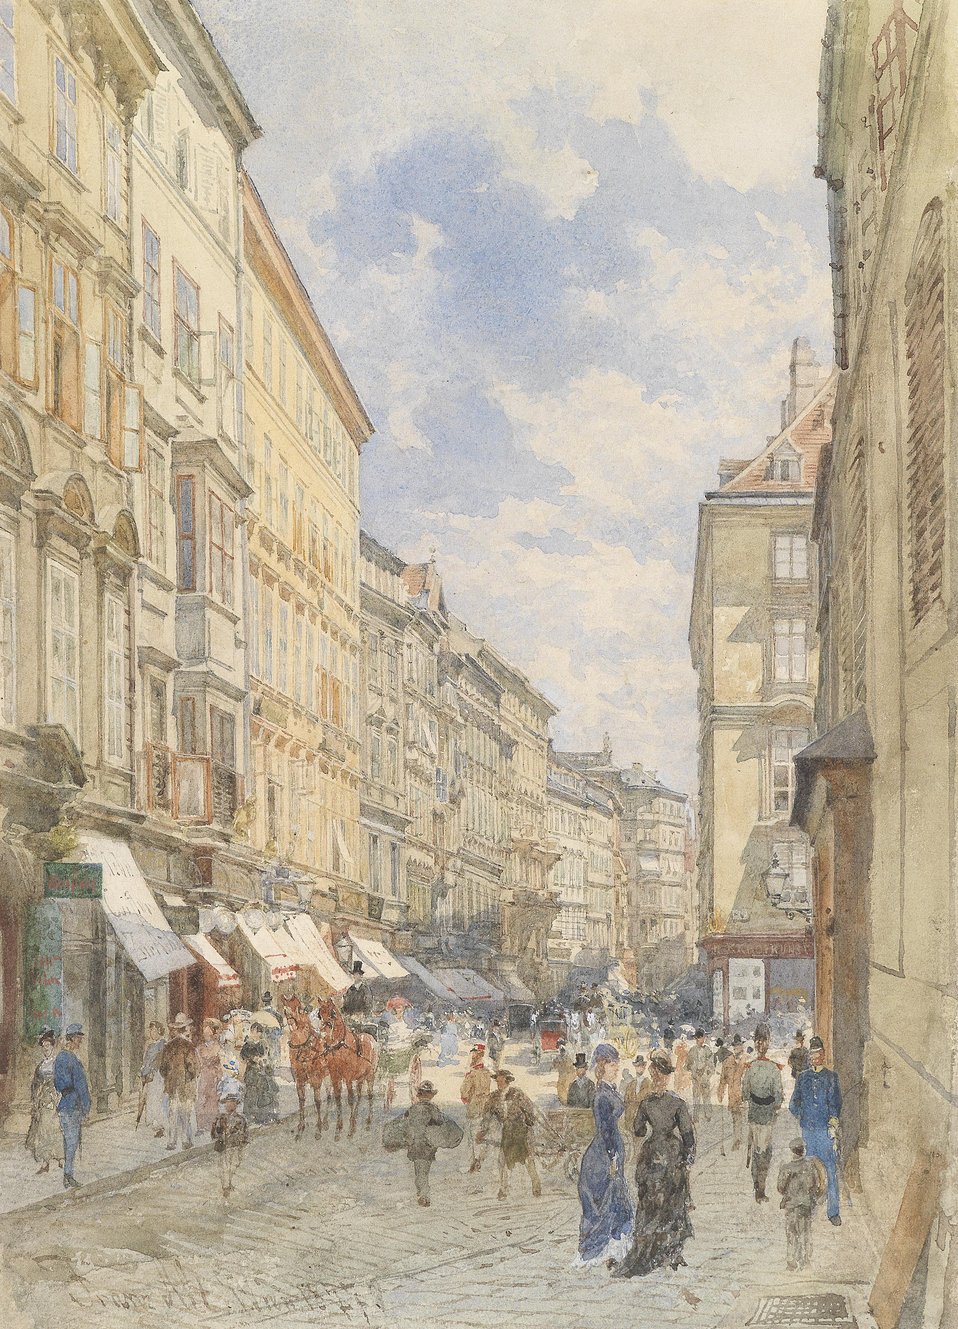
Franz Alt Weihburggasse 1877